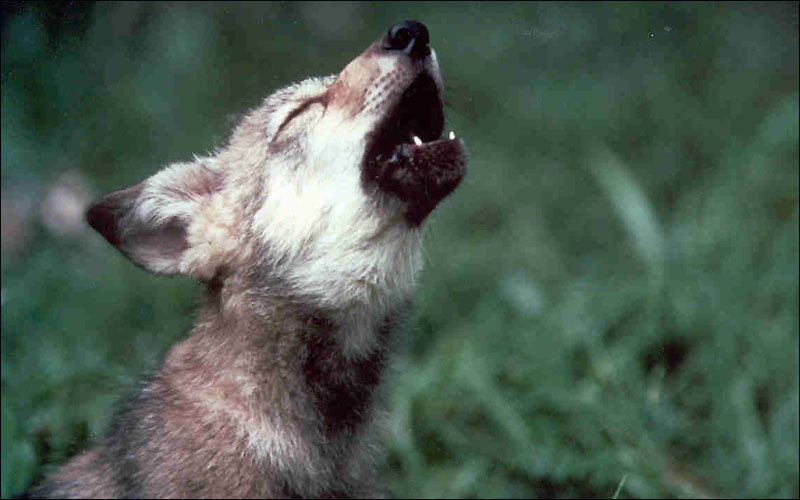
Mexican wolf pup